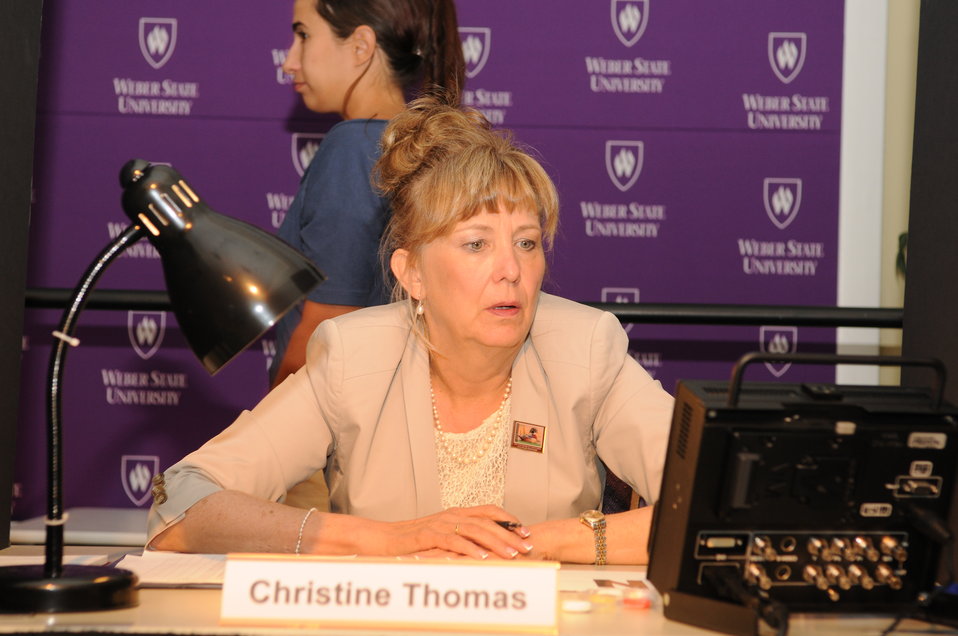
Artwork Judge

The U.S. Fish & Wildlife Service sponsored the 2012 Federal Duck Stamp Art Contest September 28 and 29 in Ogden, Utah, at Weber State University. A panel of five judges was responsible for choosing the art work used to design the 2013-2014 Migratory Bird Hunting and Conservation Stamp.